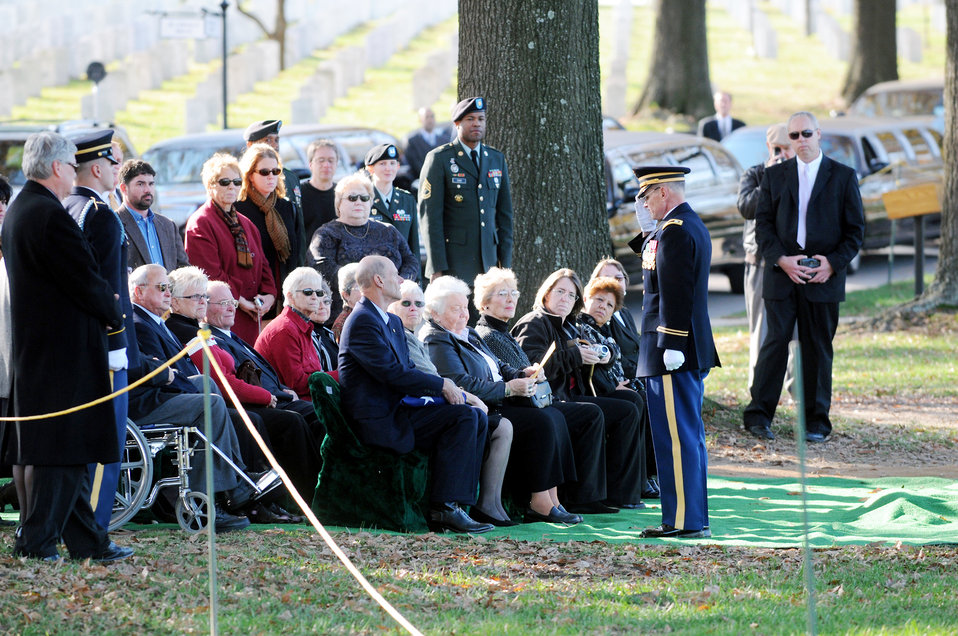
Funeral highlights search for missing servicemembers

A high ranking military official salutes a family member after presenting the American flag at an internment ceremony for seven members of the World War II B-25 aircrew that were lost Dec. 5, 1942, near Papua, New Guinea, at Arlington National Cemetery in Virginia Nov. 17, 2009.